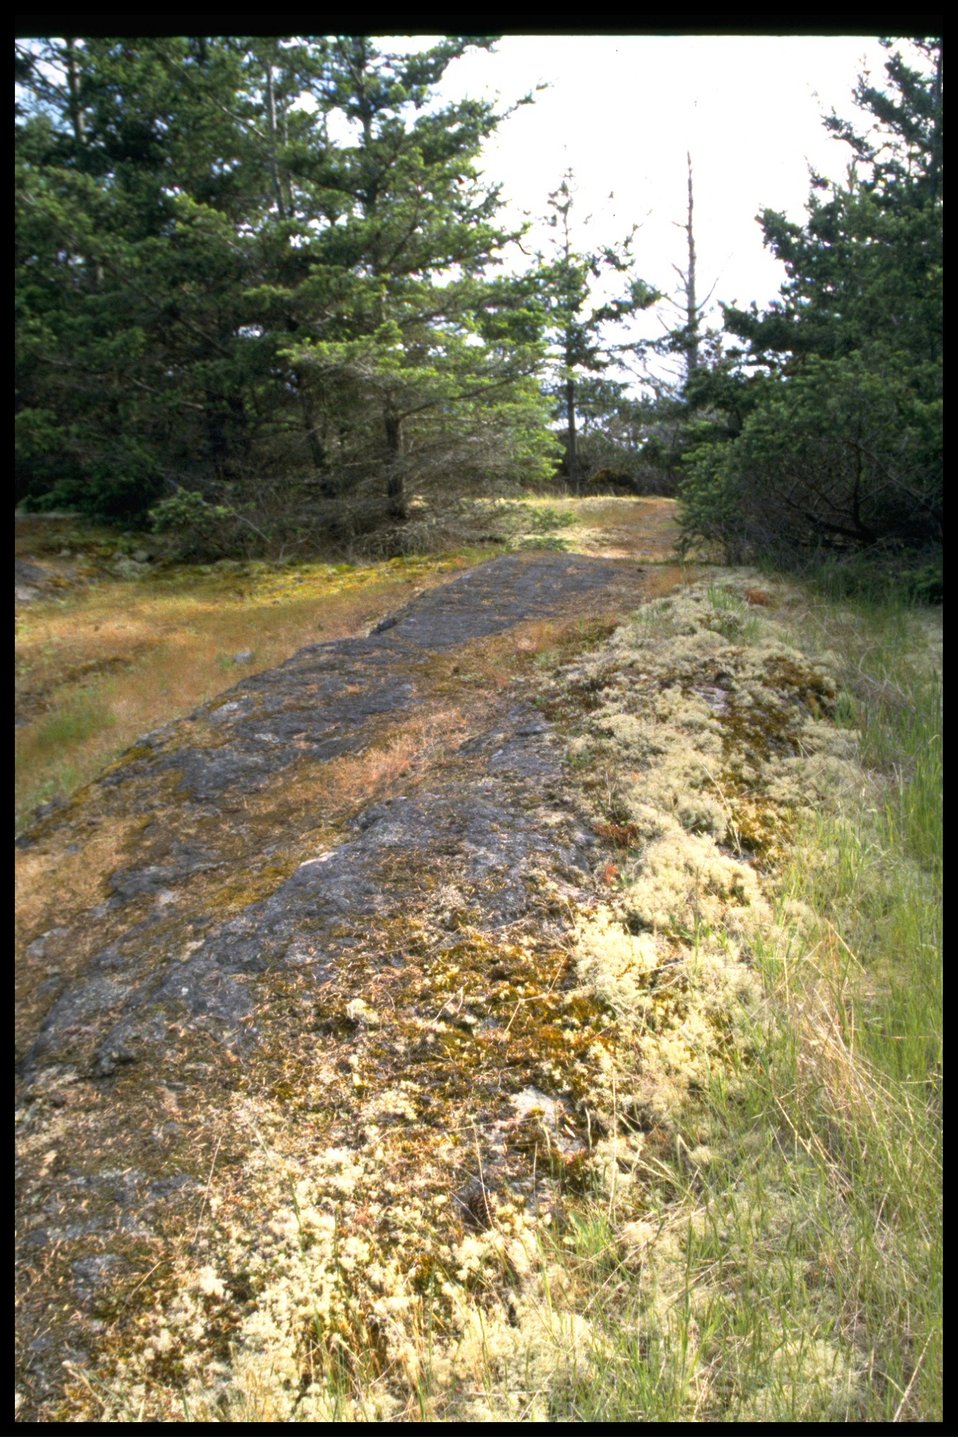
Trail along rock with lichen at Point Colville.